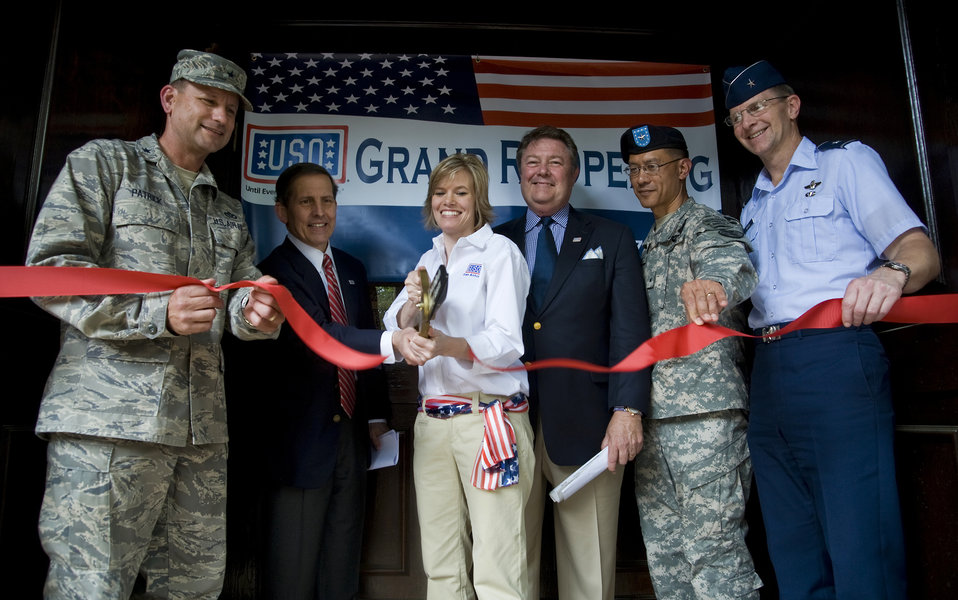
USO reopening in San Antonio

Brig. Gen. Leonard A.